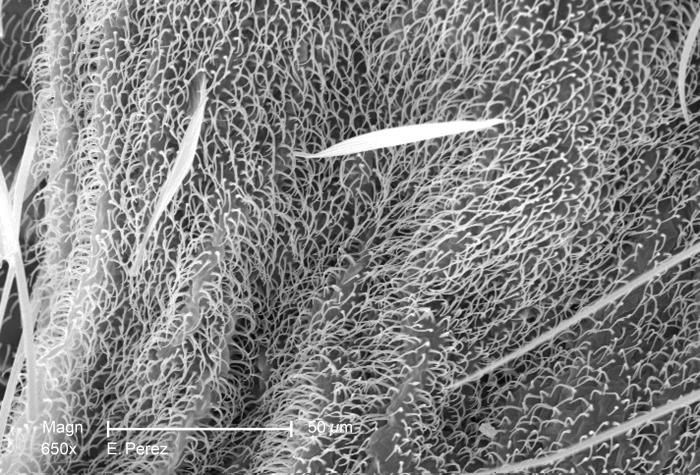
Under a relatively moderate magnification of 650X, focusing of the abdominal segment of an unidentified mosquito, this scanning electron micrograph (SEM) revealed some of the minute exoskeletal details adorning this organism foung in the Decatur, Georgia suburbs. As a member of the Phylum Arthropoda, i.e., Arthro = 'jointed', and poda 'leg', this insect is supported by a jointed exoskeleton, thereby, facilitating mobility of all of its body parts. For a view if the abdominal surface at a lower magnification, see PHIL 10509.